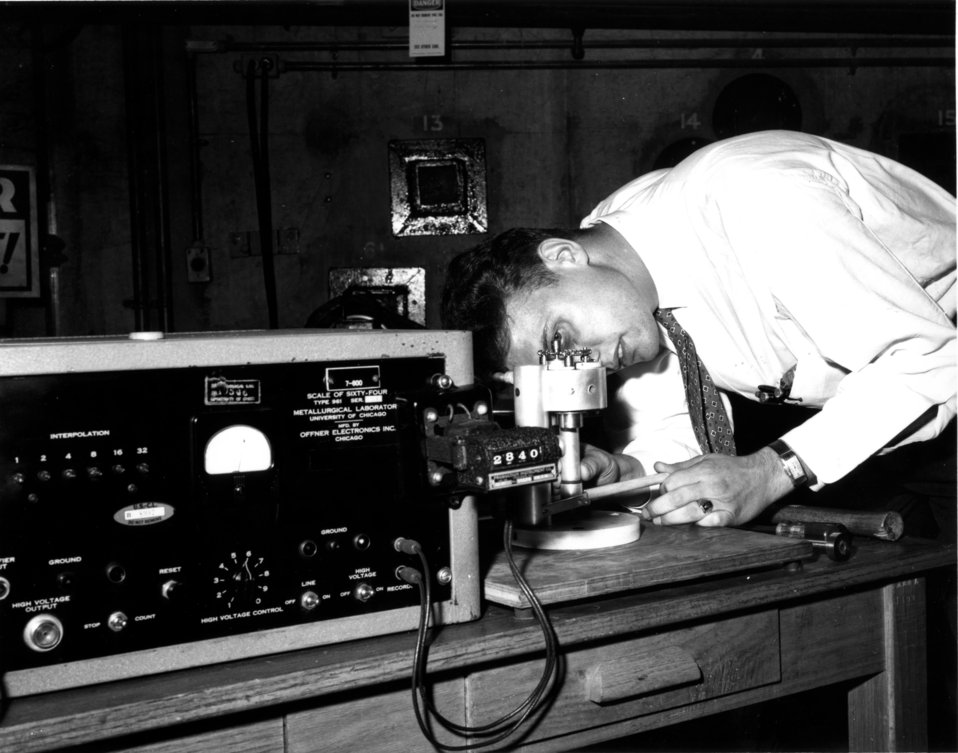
X-10 at Oak Ridge